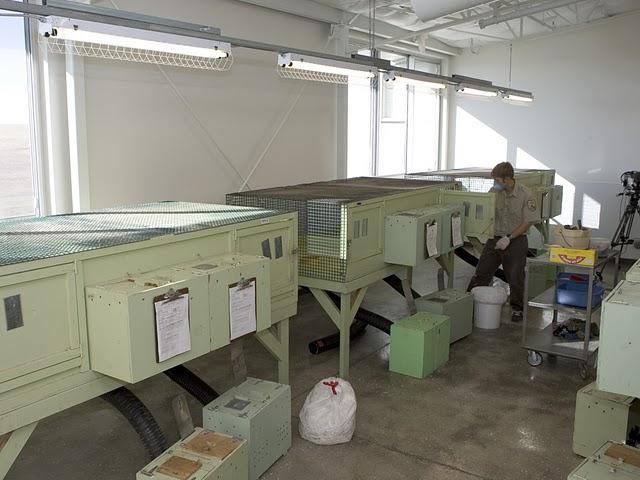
National Black-footed Ferret Conservation Center